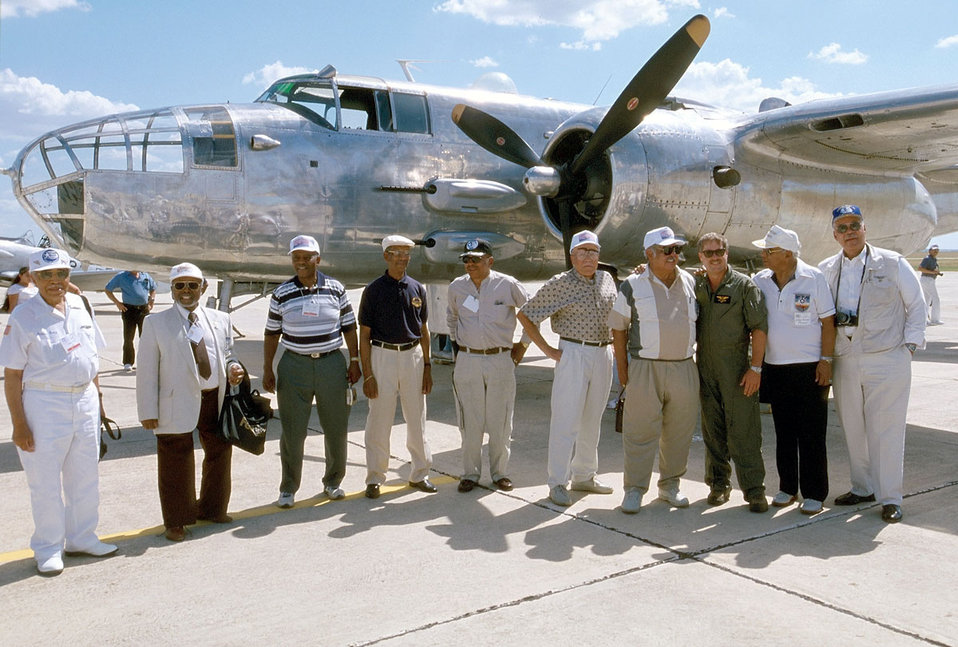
Redtails Return

HONDO, Texas -- Former Tuskegee Airmen pilots and navigators take time to pose in front of a B-25 Mitchell bomber, Aug. 14, 2000, which was flown by Jeff Hefner (third from the right), who co-owns the restored aircraft. Members of the Tuskegee Airmen who flew the aircraft during World War II got a chance to ride in the aircraft for the first time since World War II.